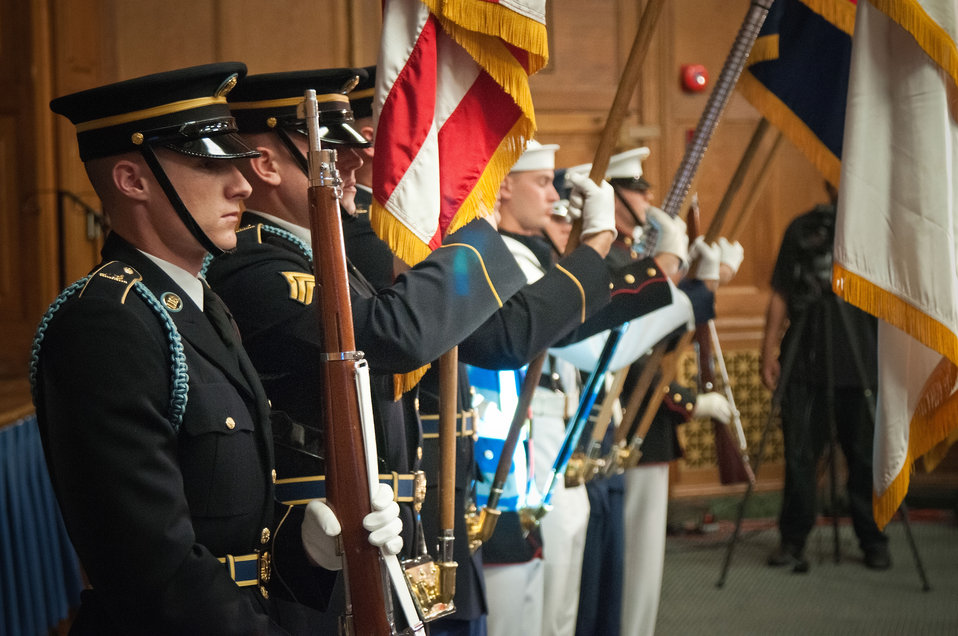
The Joint Armed Forces Color Guard Military District of Washington, D.C., presented the Colors at the Lesbian, Gay, Bisexual and Transgender (LGBT) Pride Observance, “The Sum of Us: Lesbian, Gay, Bisexual and Transgender Pioneers” at the United States Department of Agriculture in Washington, D.C., Thursday, June 7, 2012.